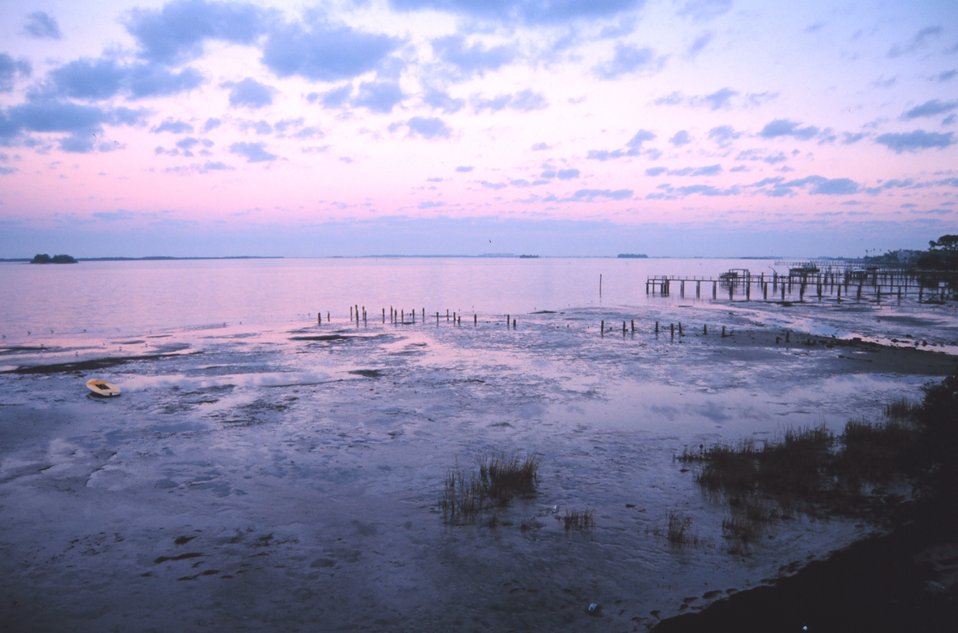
Tidal flats exposed by an early morning low tide